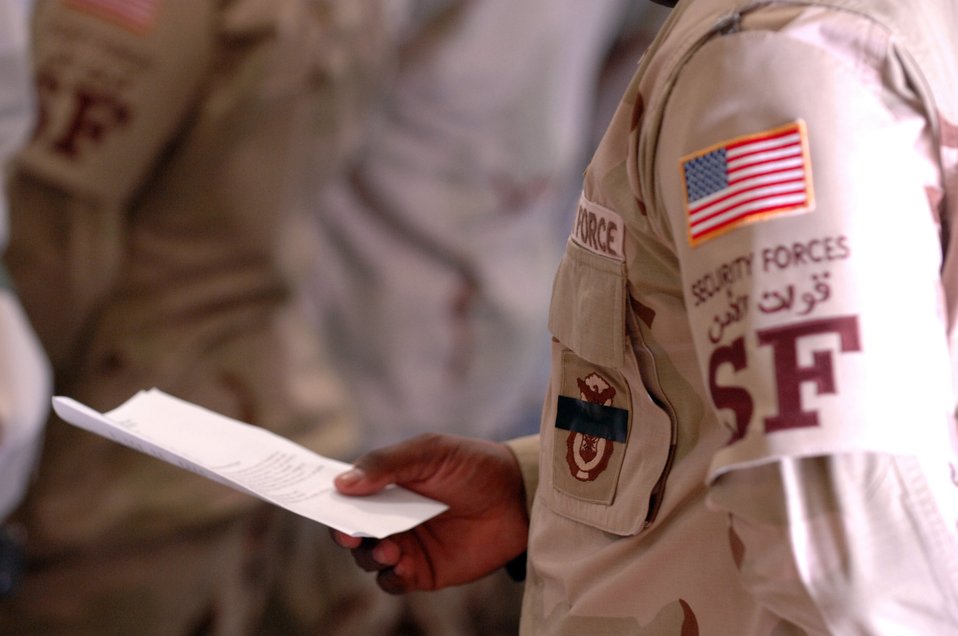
Final salute

SOUTHWEST ASIA (AFPN) -- An Airman with the 379th Air Expeditionary Security Forces Squadron reads a passage during a memorial service Jan. 26 for two Airmen killed in action. Base security forces Airmen wore black tape across their badges as a sign of respect for the two Airmen -- Tech. Sgt. Jason L. Norton and Staff Sgt. Brian McElroy of Elmendorf Air Force Base, Alaska.